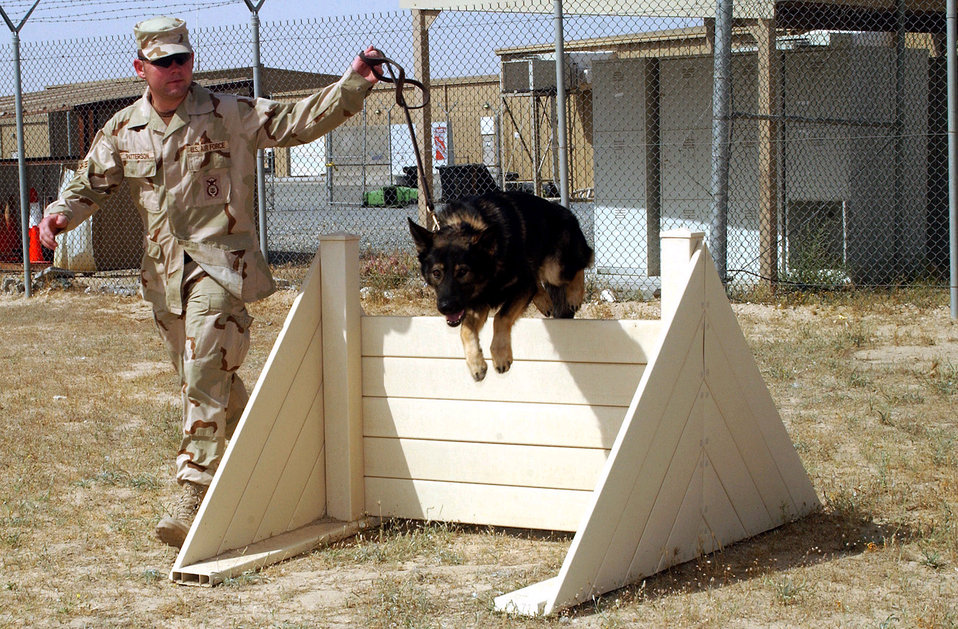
Up and over

AL JABER AIR BASE, Kuwait -- Senior Airman Harold R. Patterson guides his military working dog, Agar, over the obstacle here March 30. Airman Patterson and Agar are part of the security forces K-9 unit assigned here from Spangdahlem Air Base, Germany.